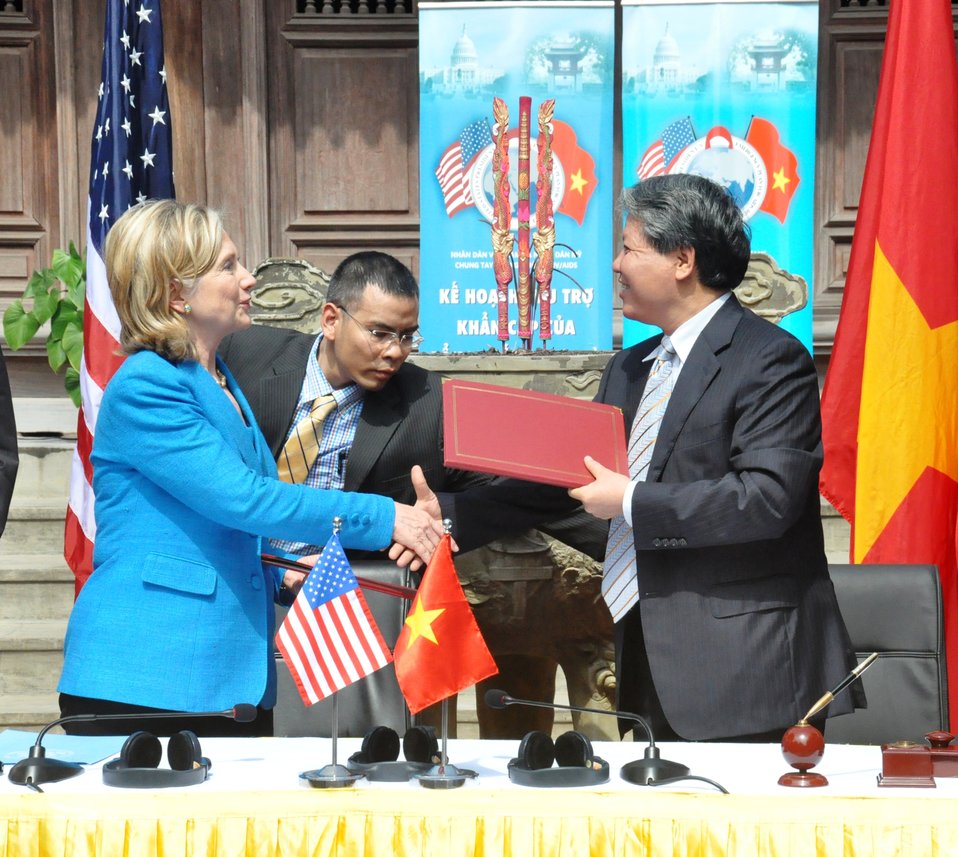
Secretary Clinton Shakes Hands With Vietnamese Justice Minister Ha Hung Cuong

U.S. Secretary of State Hillary Rodham Clinton shakes hands with Vietnamese Justice Minister Ha Hung Cuong at a U.S.-Vietnam PEPFAR Partnership Framework Signing Ceremony at Ngoc Lam Pagoda in Hanoi, Vietnam, on July 22, 2010.